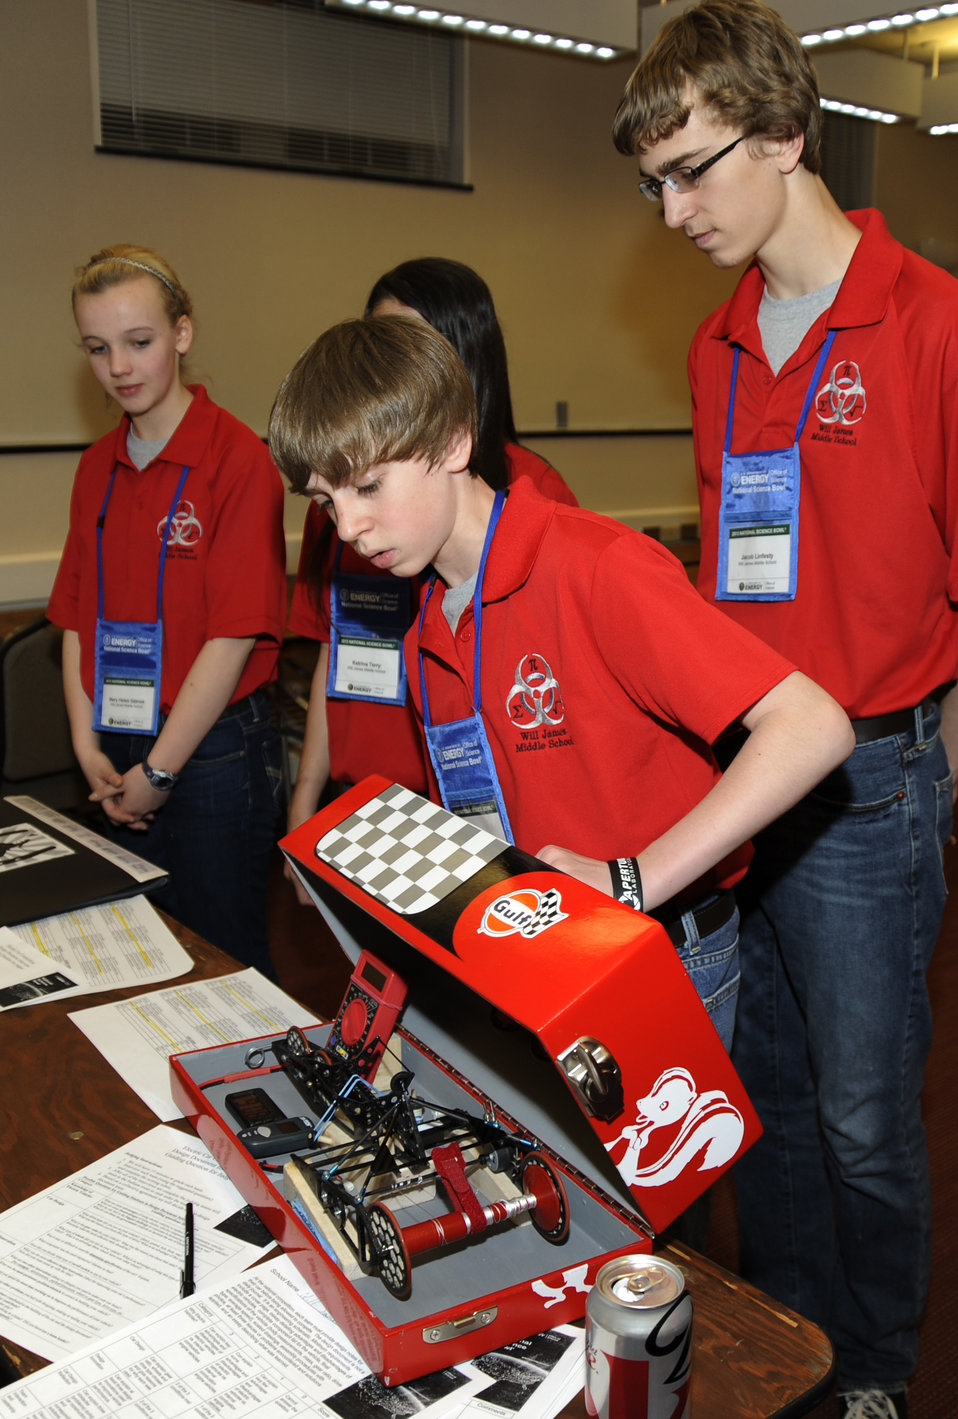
Students from Will James Middle School in Billings, MT present the team's electric car design during the Electric Car Competition of the 2013 National Science Bowl in Washington, DC.
The Department of Energy created the National Science Bowl in 1991 to encourage students to excel in mathematics and science and to pursue careers in these fields.